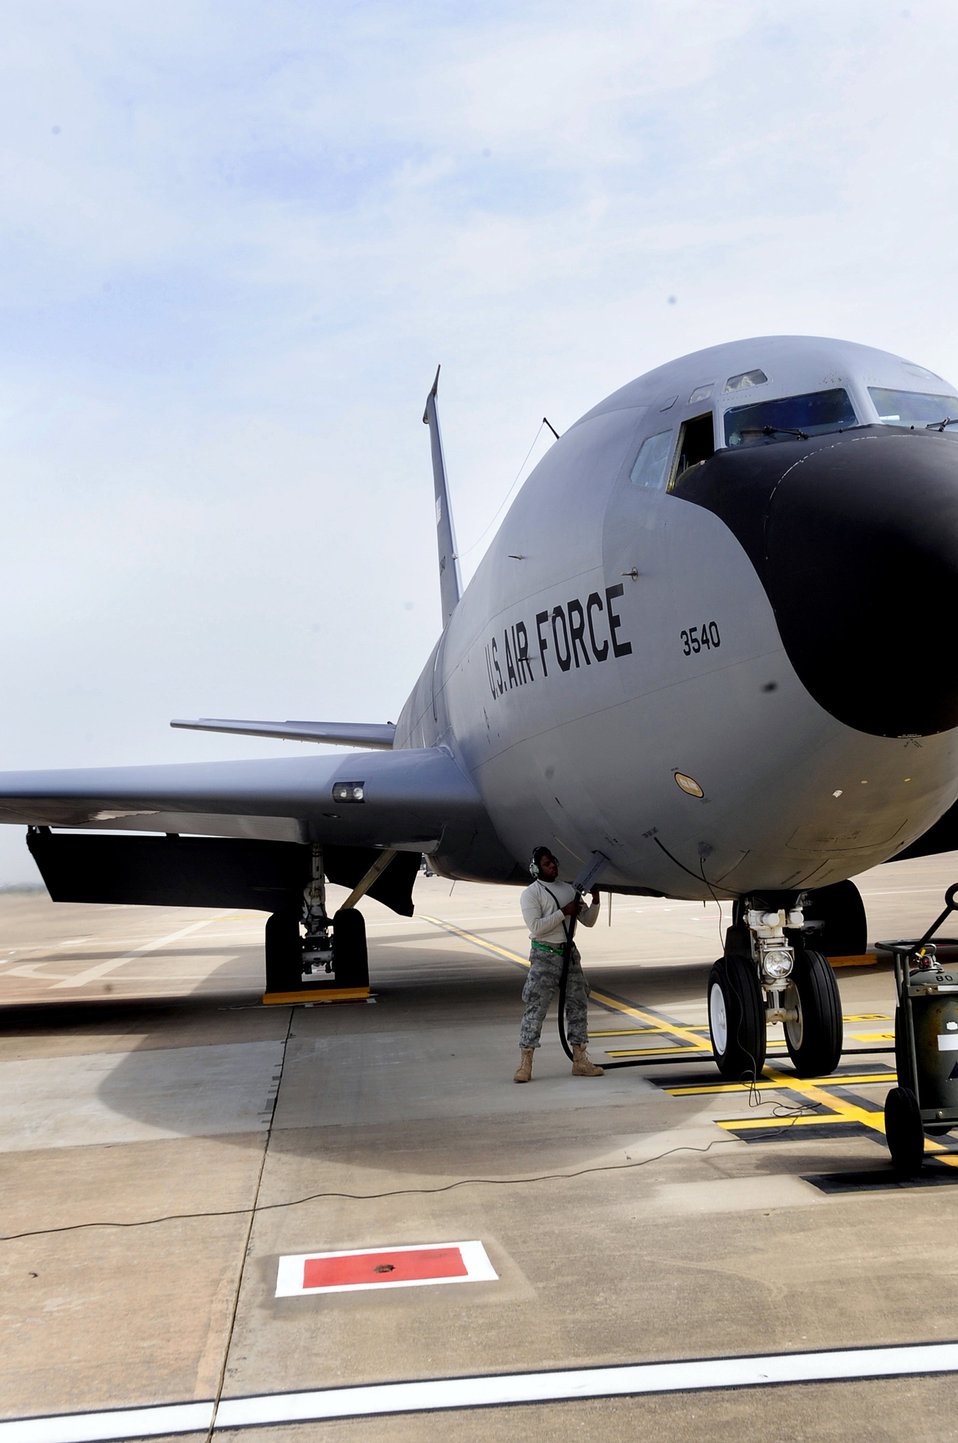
313th AEW Odyssey Dawn

A 22nd Aircraft Maintenance Squadron crew chief plugs a generator power cable into a KC-135 Stratotanker March 25, 2011, at Spangdahlem Air Base, Germany, in support of Joint Task Force Odyssey Dawn. Joint Task Force Odyssey Dawn is the U.S. Africa Command task force established to provide operational and tactical command and control of U.S. military forces supporting the international response to the unrest in Libya and enforcement of United Nations Security Council Resolution 1973.